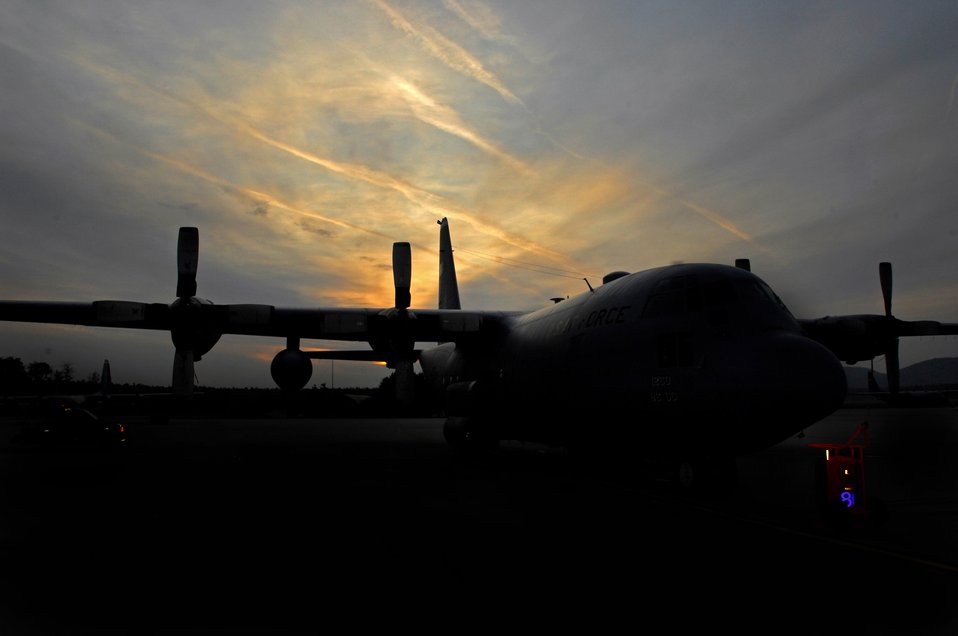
Underneath painted sky

The sun rises over a prepped C-130 Hercules aircraft ready for daily missions at Ramstein Air Base, Germany, Sept. 18. The Ramstein flightline is one of the busiest in the Air Force, launching more than 40 aircraft each day.